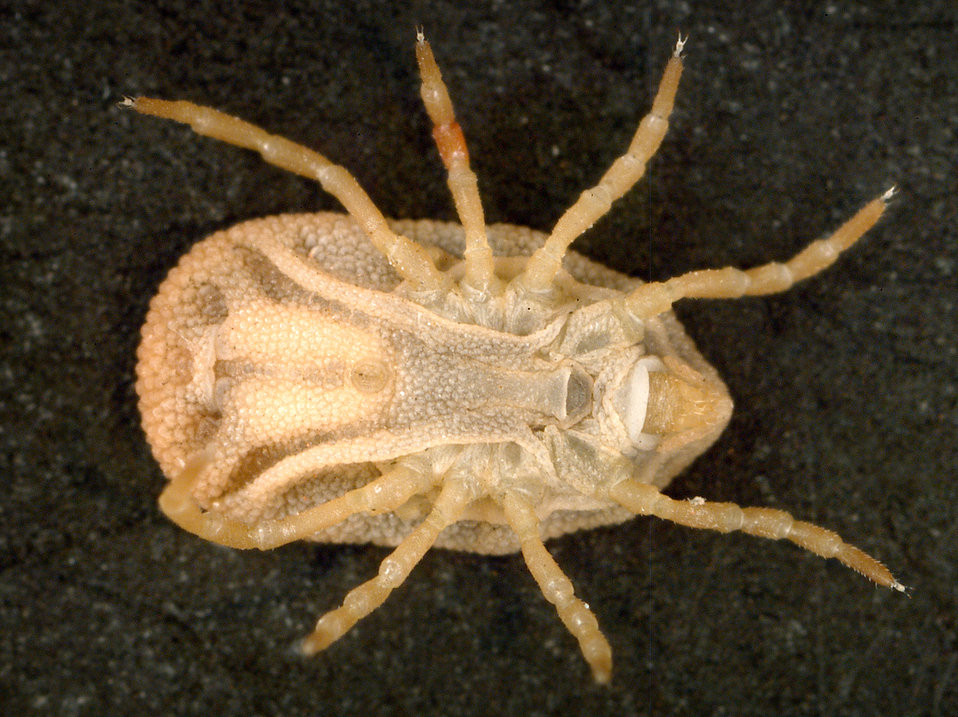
This is a ventral view of the 'soft tick' Carios kelleyi, formerly Ornithodoros kelleyi, or the 'Bat Tick'.